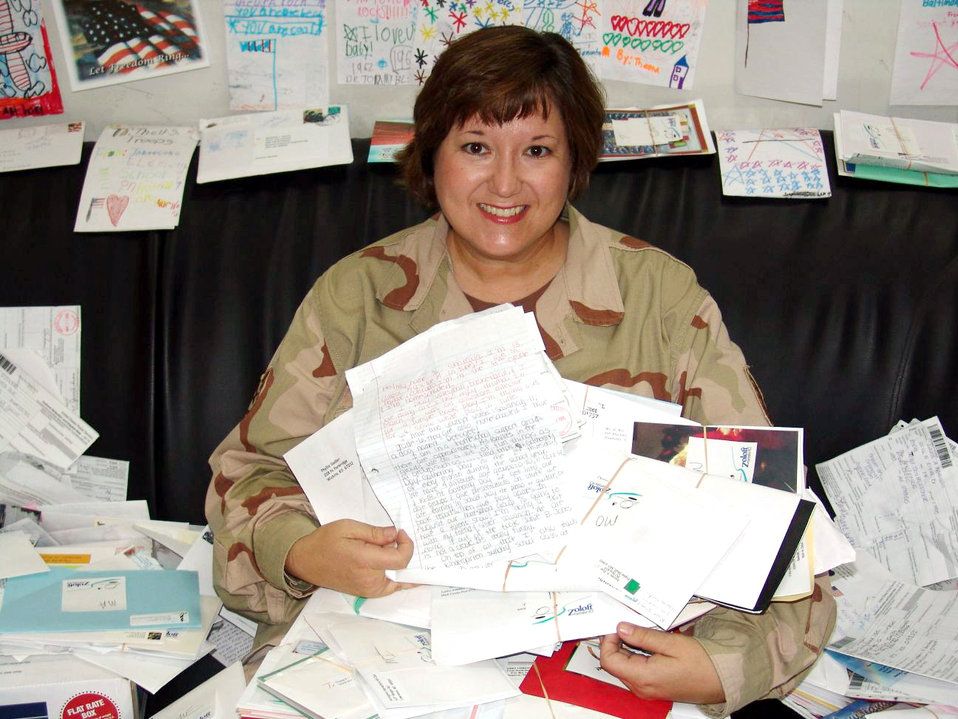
Airman receives support through letters

SOUTHWEST ASIA -- Tech. Sgt. Michelle Smith displays her many letters, cards and pictures mailed to her by various supporters. She is the noncommissioned officer in charge of the 386the Expeditionary Medical Group's bioenvironmental engineering office at a forward-deployed location.